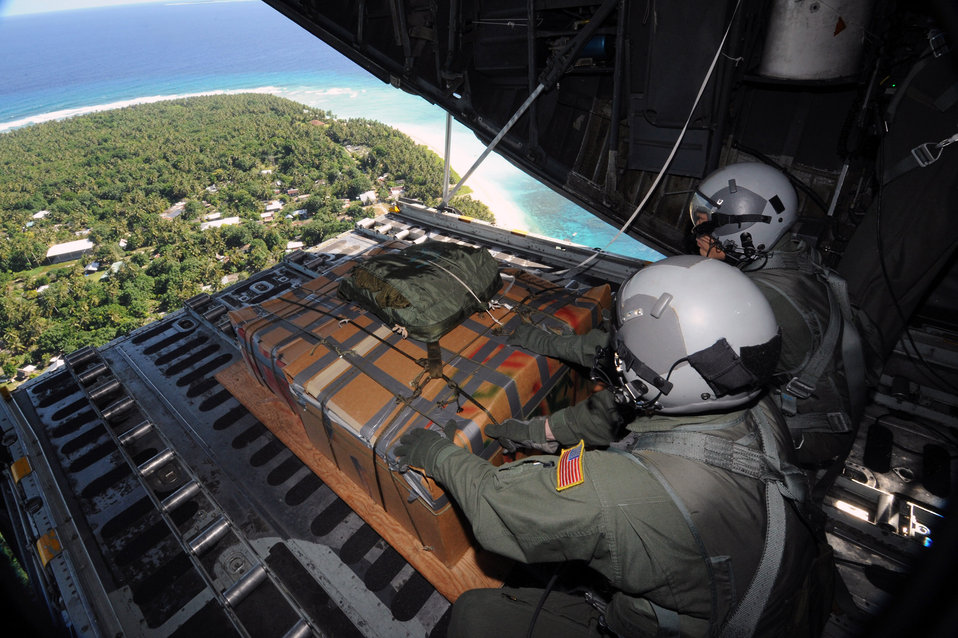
Operation Christmas Drop

Tech. Sgt. Heath Bahyi and another crewmember wait for the right moment to push a boxed pallet of donated supplies from a C-130 Hercules during the 2008 Operation Christmas Drop Dec. 19 over the remote Island of Yap. Through military and local community support, the operation collected tens of thousands of donated items and raised more than $30,000 in support. Airmen today continue the tradition of delivering supplies to remote islands of the Commonwealth of the Northern Marianas Islands, Yap, Palau, Chuuk and Pohnpei. Sergeant Bahyi is a loadmaster from the 36th Airlift Squadron from Yokota Air Base, Japan.